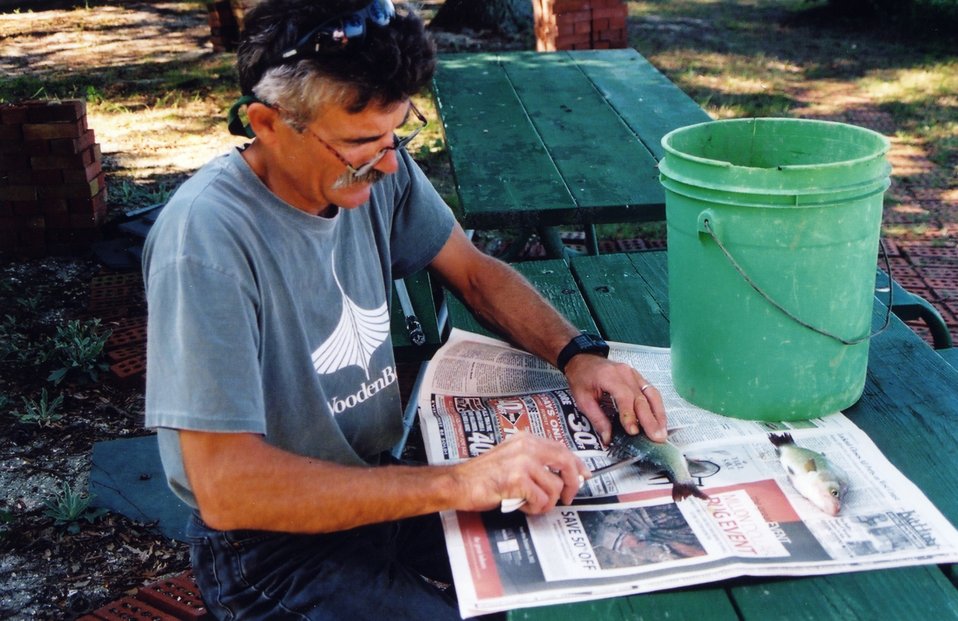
Filleting the day's catch.